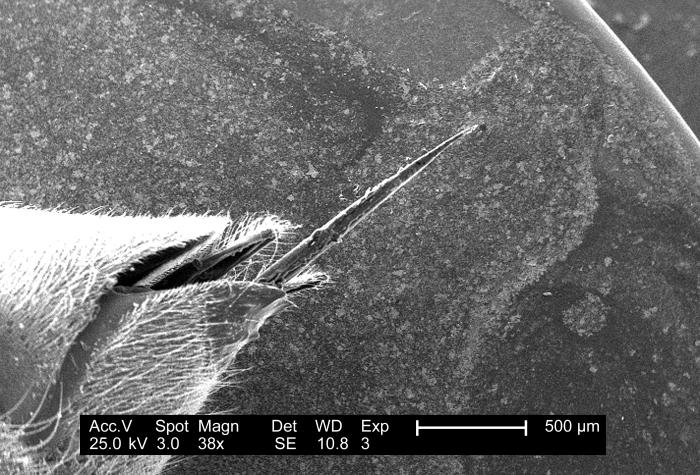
From a lateral perspective, and under a low magnification of 38x, this scanning electron micrograph (SEM) depicted the some of the ultrastructural morphologic details of the stinger apparatus of an unidentified bee found deceased in the Decatur, Georgia suburbs.